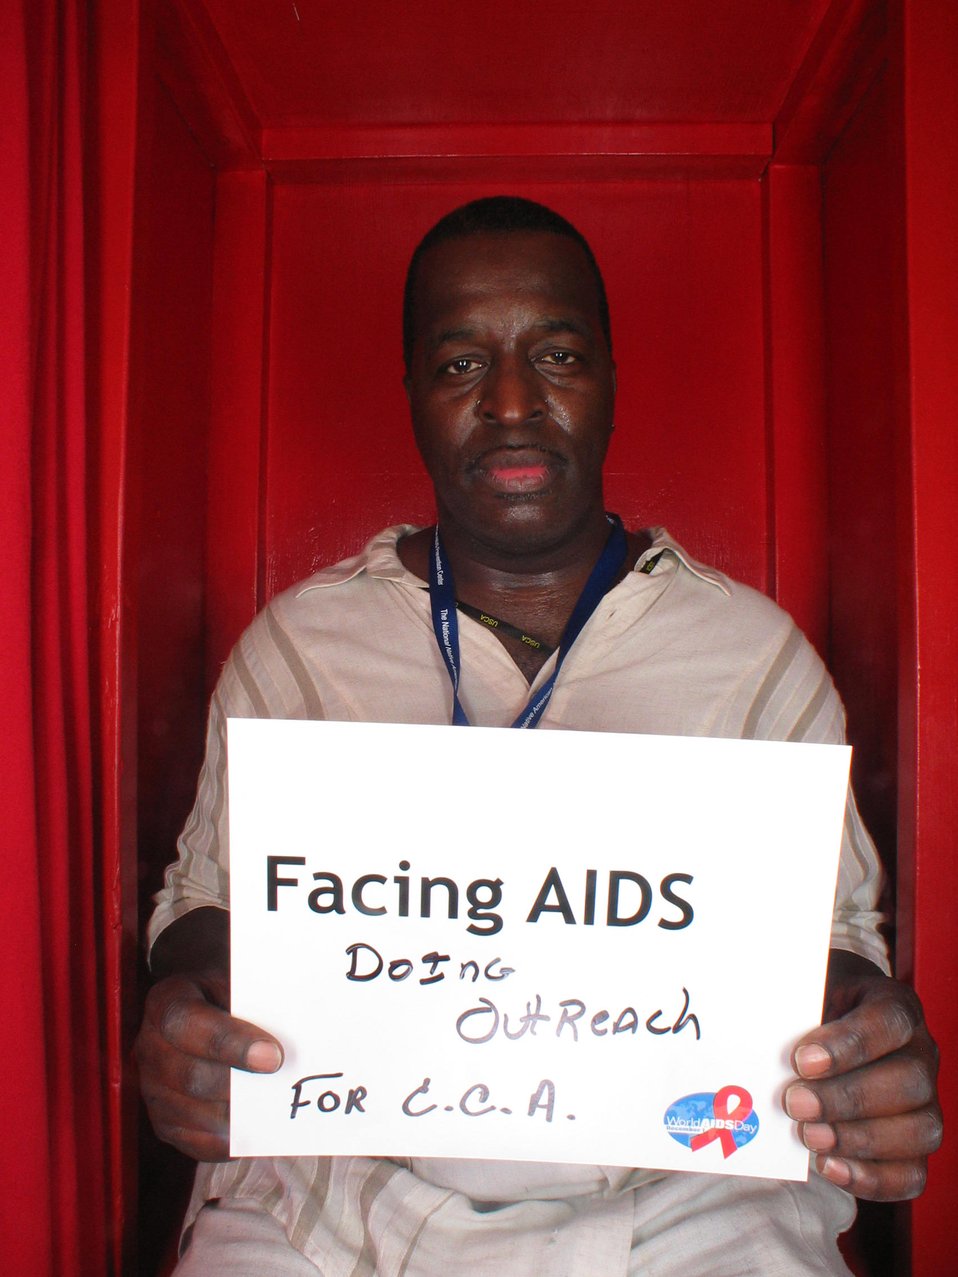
Facing AIDS doing outreach.